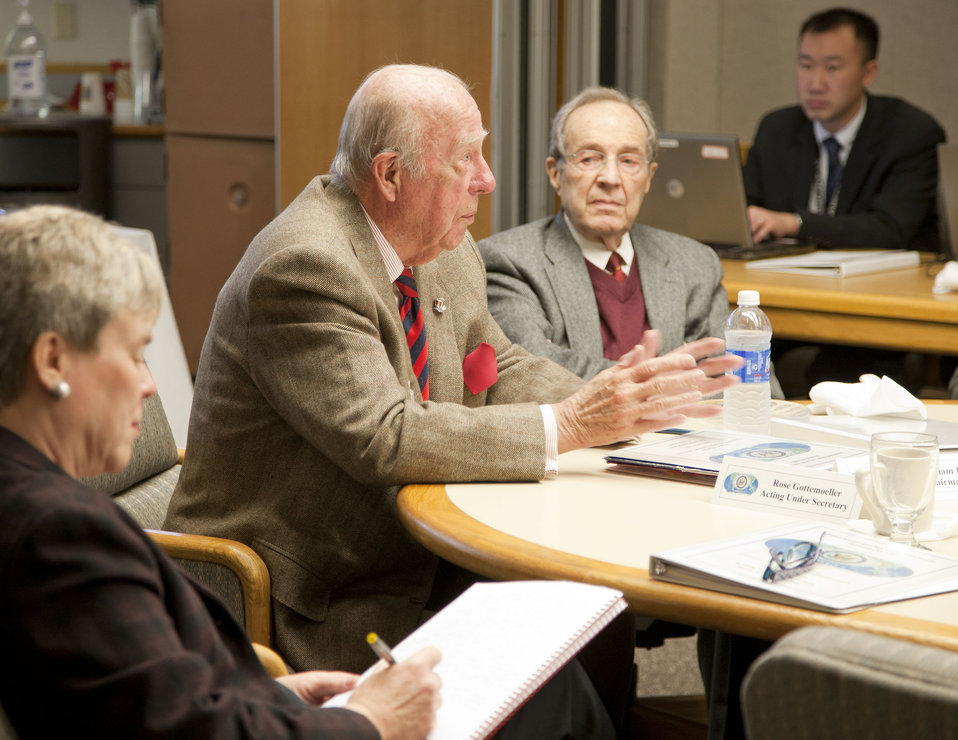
Acting Under Secretary Gottemoeller Meets With ISAB Members

Acting Under Secretary of State for Arms Control and International Security Rose Gottemoeller participates in a meeting of the International Security Advisory Board with Former Secretary of State George Schulz and Former Secretary of Defense William Perry at the Lawrence Livermore National Laboratory in Livermore, California, on February 8, 2012. [Lawrence Livermore National Laboratory by Jacqueline McBride]